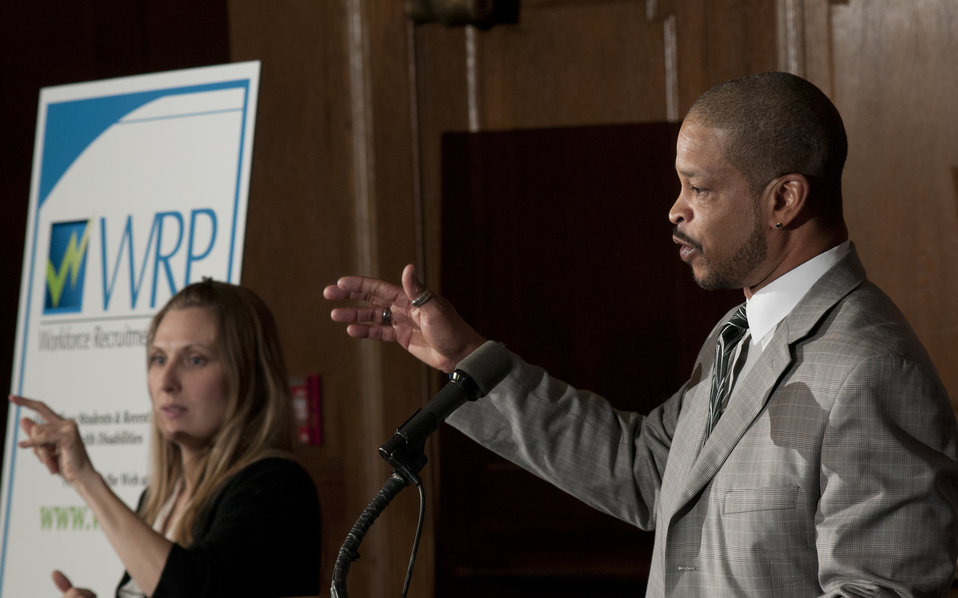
William (Billy) P. Milton, Jr.,Deputy Director, Office of Human Resources Management, Departmental Management, U.S. Department of Agriculture, addresses the Work Force Recruitment Program’s (WRP) 'Your Key To Hiring Student Interns and Employees with Disabilities” event hosted by the United States Department of Agriculture (USDA) in the Jefferson Auditorium, Washington, D.C. on Tuesday, February 7, 2012.